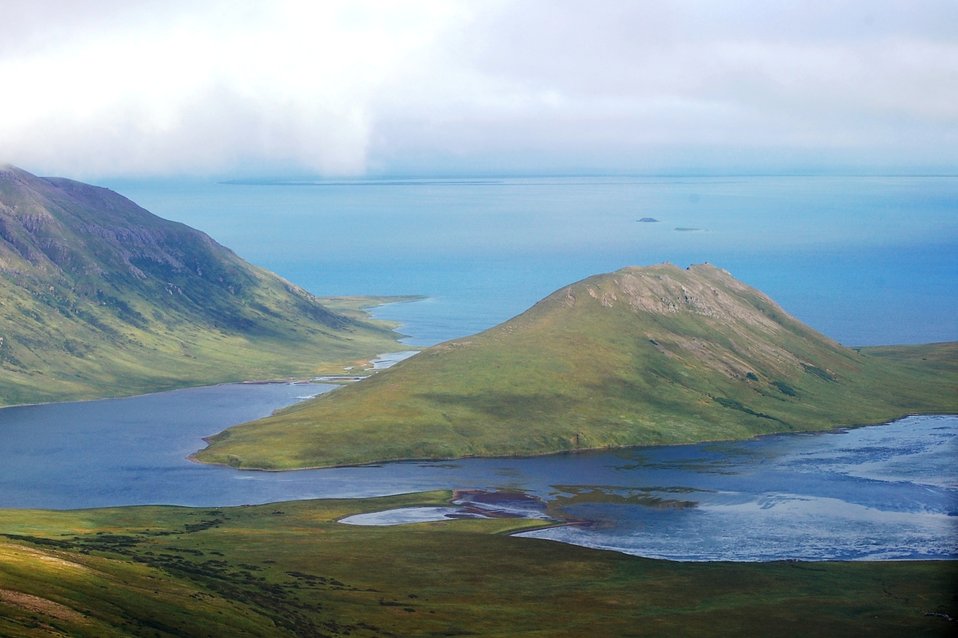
Aleutian Range

Izembek National Wildlife Refuge